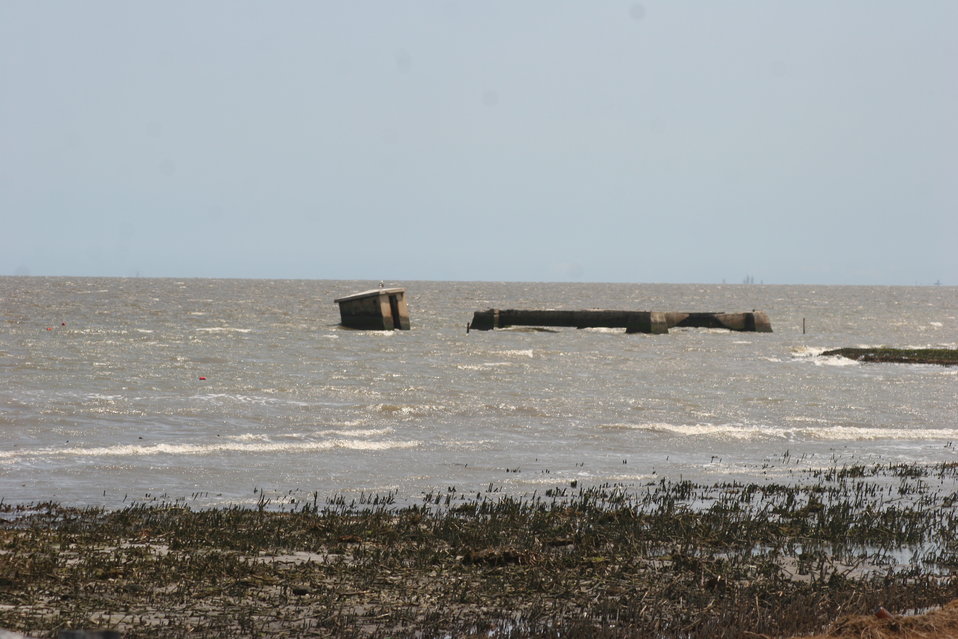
World War I tower at Prime Hook NWR